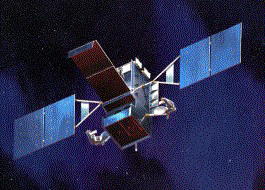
SBIRS GEO-1 Satellite

A Space-Based Infrared System GEO-1 Satellite.